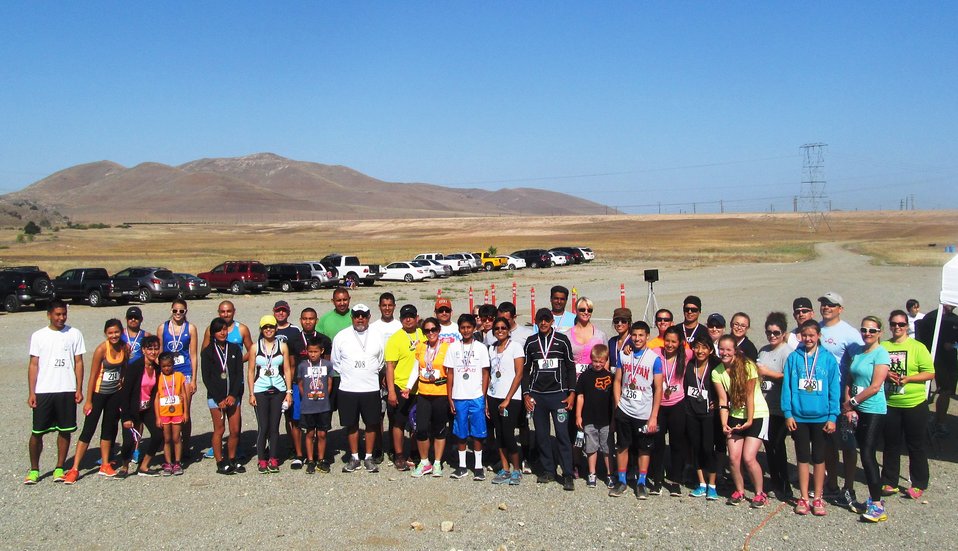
Success Lake hosts first-ever 5K trail run

The Sacramento District hosted 43 runners and walkers at the first-ever 5K trail run at the Corps’ Success Lake near Porterville, Calif., May 10, 2014. The Corps partnered with the City of Porterville Parks and Leisure Department and MaxFit Studios to host the event.